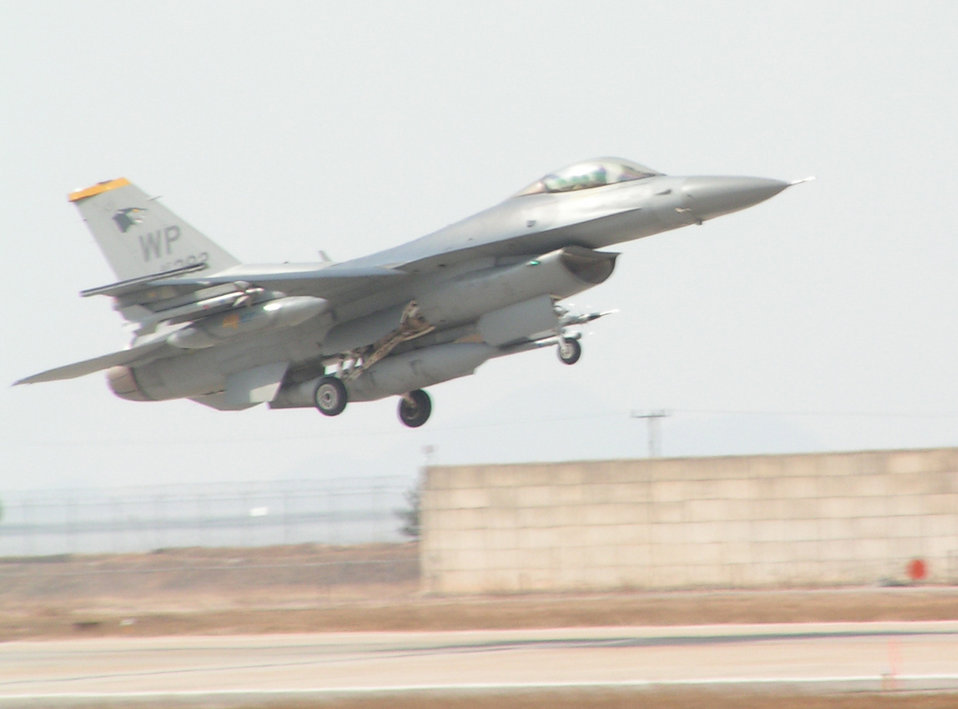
F-16 fleet prepares for 'Falcon STAR'

A Block 30 F-16 Fighting Falcon assigned to the 80th Fighter Squadron at Kunsan Air Base, South Korea, lifts off in March 2006 toward Singapore in support of Operation Commando Sling. The F-16s from the 80th FS are scheduled to enter the Falcon Structural Augmentation Roadmap program, extending the aircraft's service life.